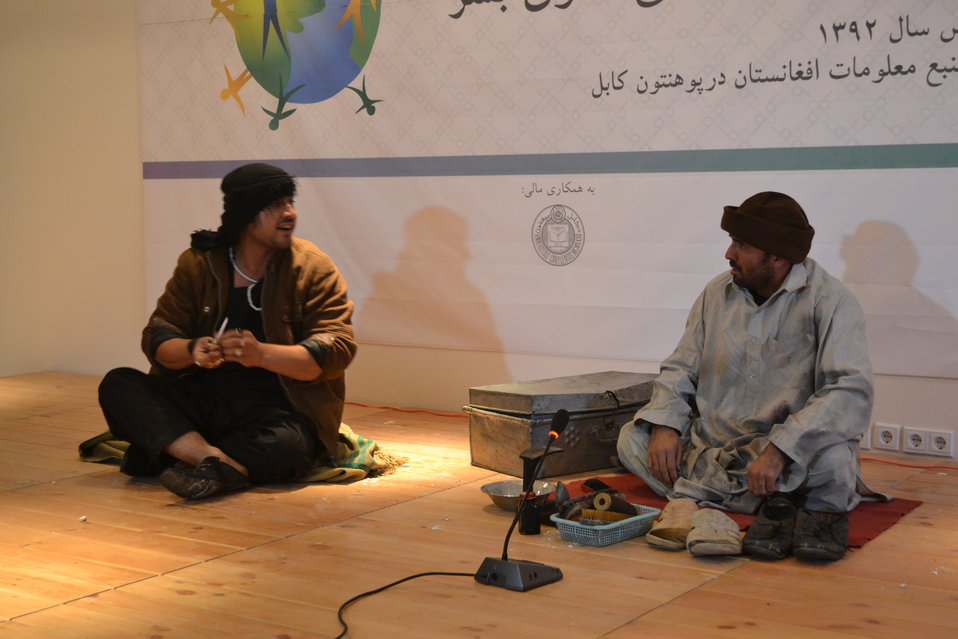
Human Rights Day at the Afghan Center, Kabul University